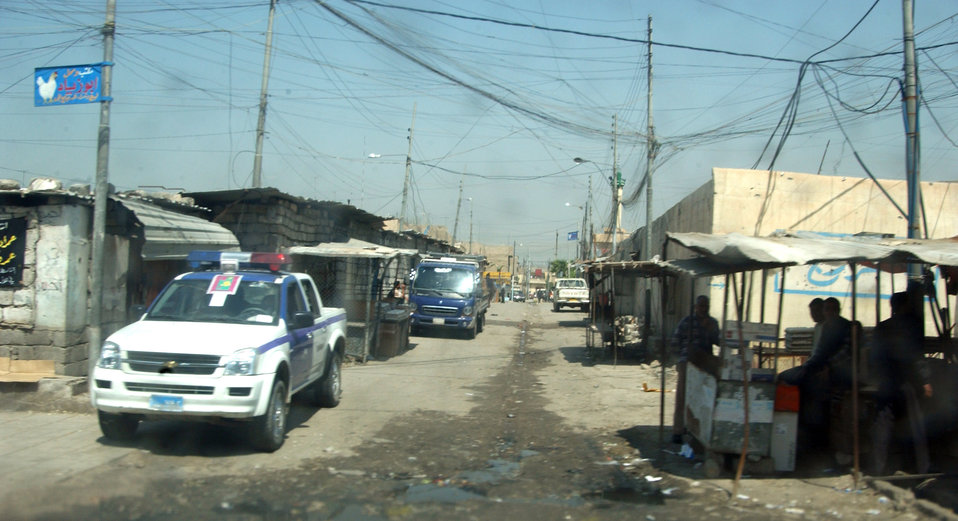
Airmen enable Iraqi police training

An Iraqi police truck sits on a street in Mosul, Iraq.